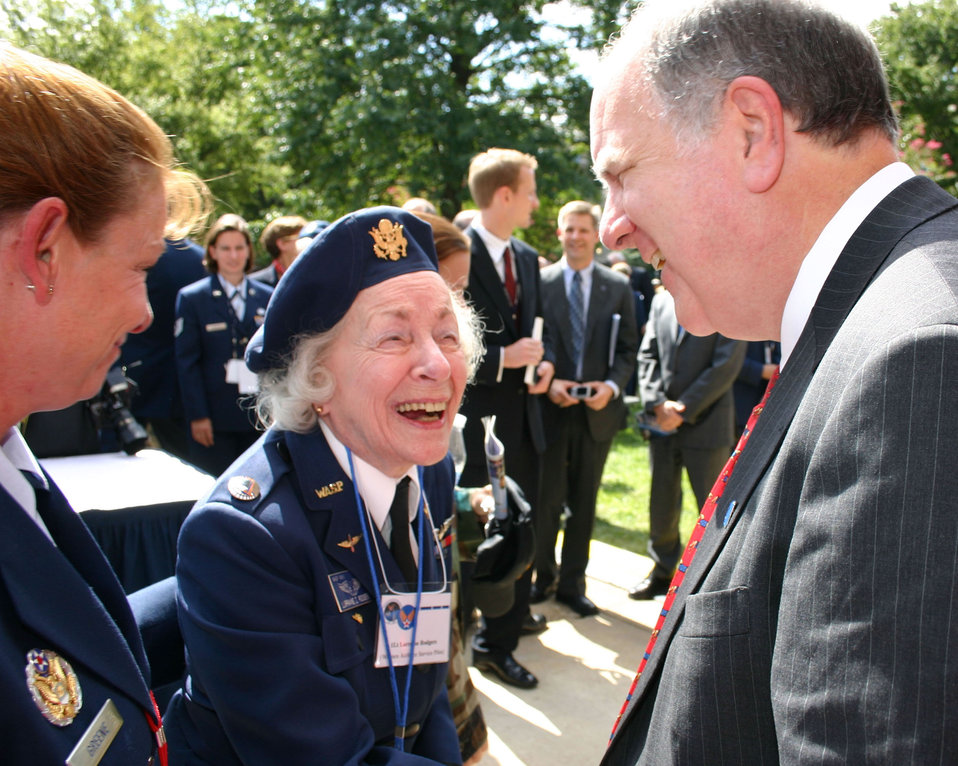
Air Force celebrates 60th anniversary

Women Airforce Service Pilot Lt. Lorraine Rodgers greets U.S. Rep. John Spratt of South Carolina during the Air Force's 60th anniversary celebration in the Pentagon courtyard Sept. 18.